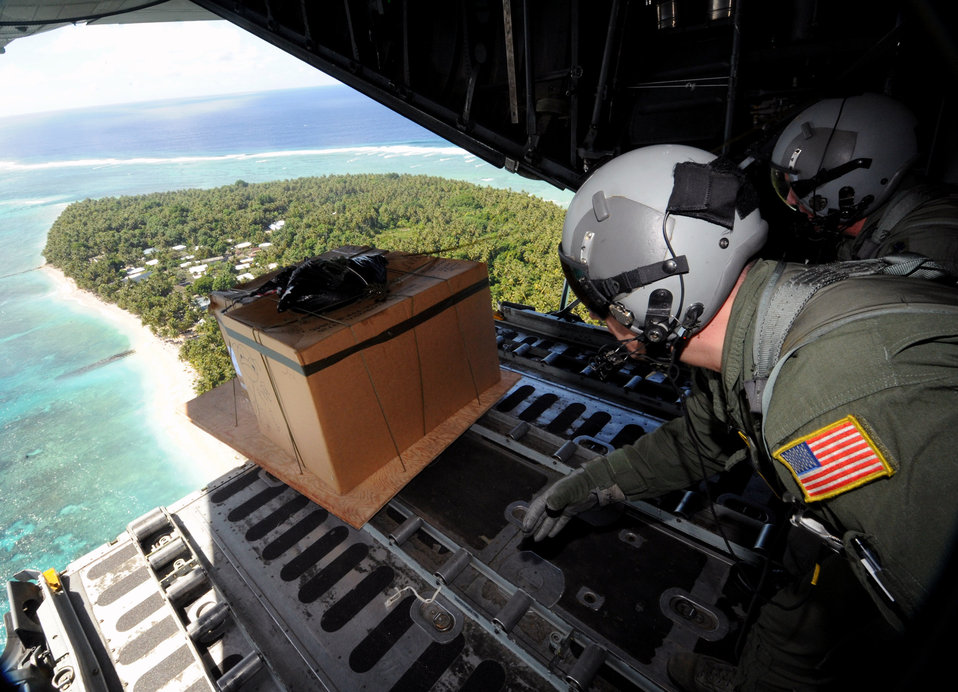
Operation Christmas Drop

Tech. Sgt. Heath Bahyi and Chief Master Sgt. Michael Sundberg push out a boxed pallet of donated goods from a C-130 Hercules during Operation Christmas Drop Dec. 19 over the remote Island of Yap. Airmen today continue the tradition of delivering supplies to remote islands of the Commonwealth of the Northern Marianas Islands, Yap, Palau, Chuuk and Pohnpei. In all, more than 180 boxes were built for the humanitarian mission, making 2008 one of the largest drops in Operation Christmas Drop's 57-year history. Sergeant Bahyi and Chief Sundberg are loadmasters from the 36th Airlift Squadron from Yokota Air Base, Japan.